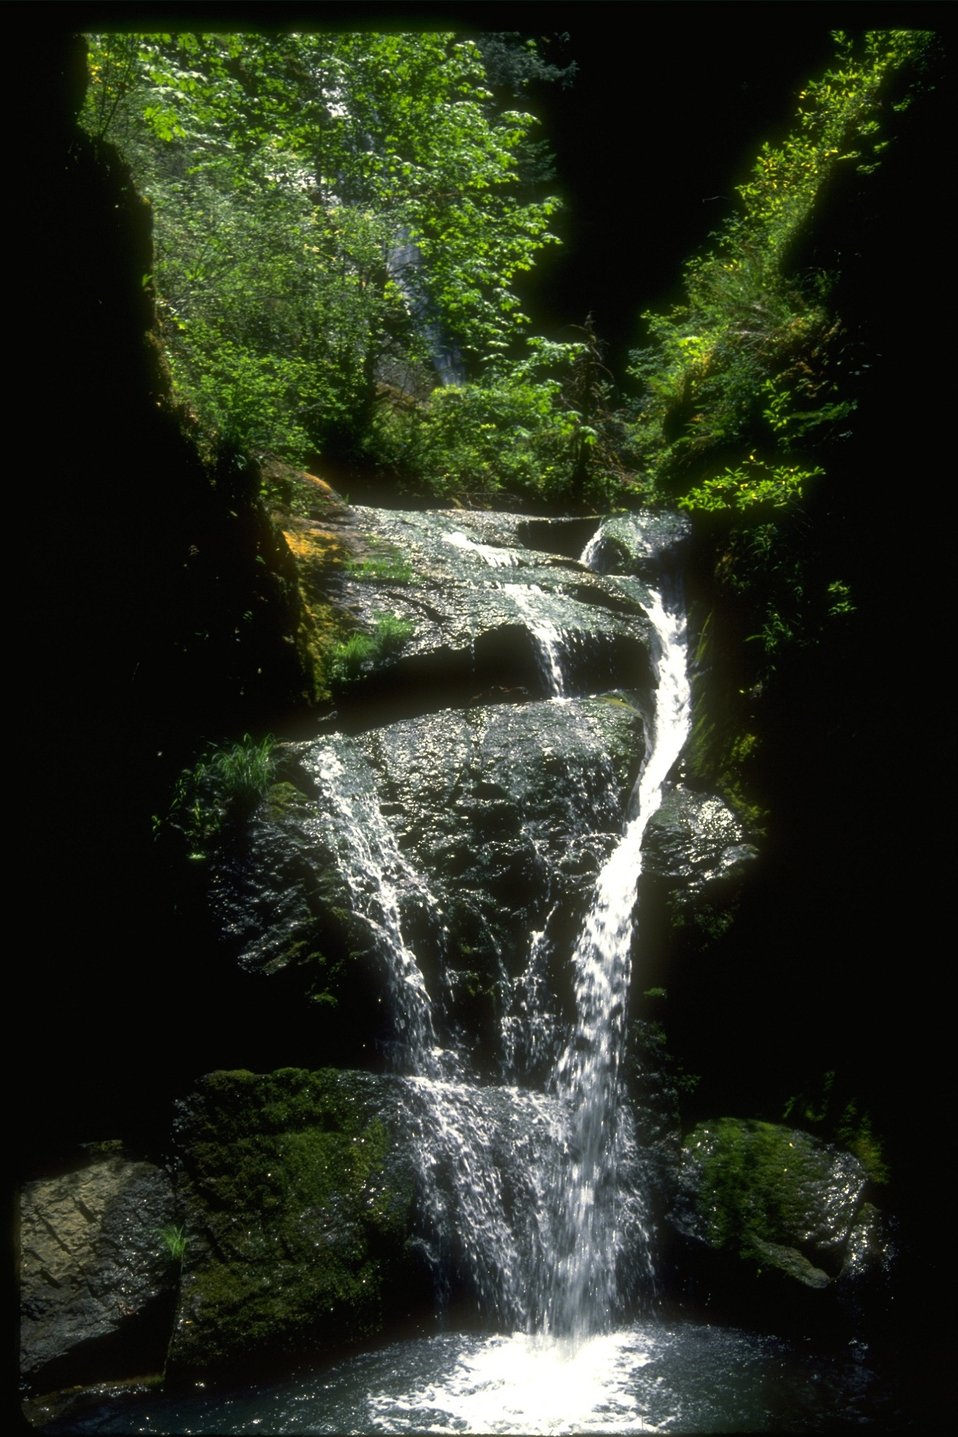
Lower Wolf Creek Falls on Wolf Creek